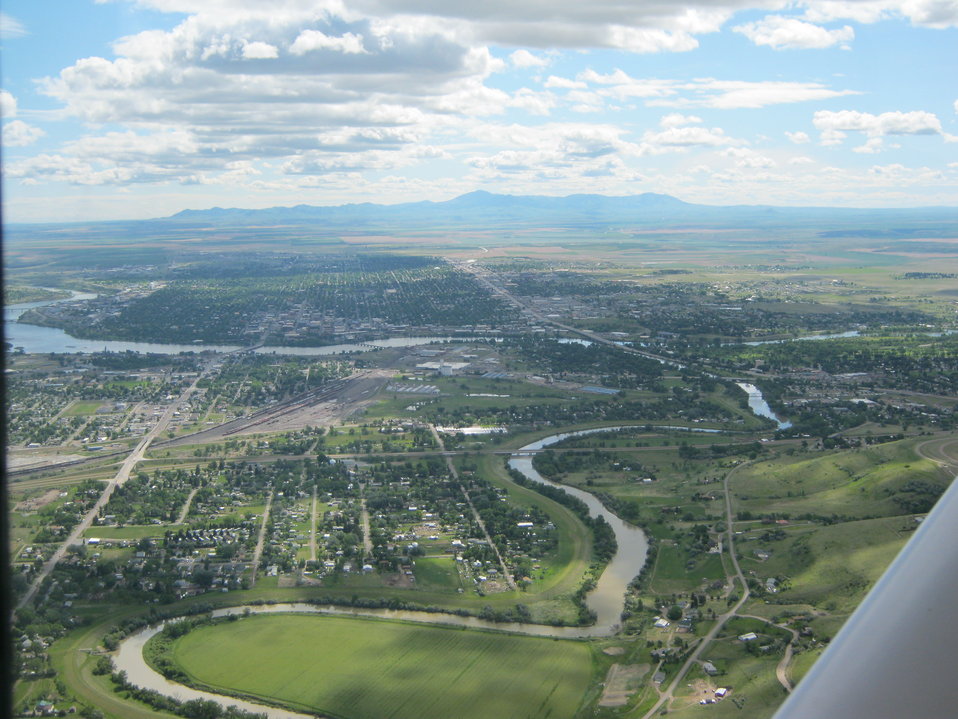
Get Your Goose On!

The goose takes flight at Benton Lake National Wildlife Refuge